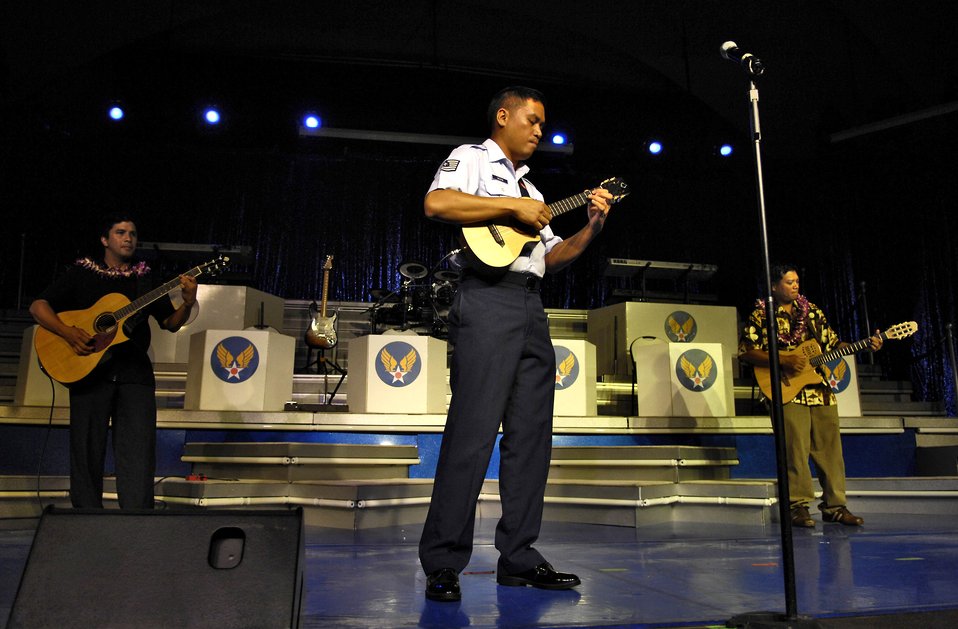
Uniquely ukulele: Airman plays from the heart

Tech. Sgt. Daniel Baduria plays his ukulele as the opening act for Tops In Blue Sept. 12 at the Waikiki Shell in Honolulu. He inherited his music talent from his father, Donald Baduria, who was an Airman with the Strolling Strings Trio in the Air Force's Tops In Blue entertainment showcase in the 1950s. Sergeant Badura played as part of the Heritage to Horizons theme of the Air Force's 60th anniversary. Tops In Blue, the Air Force's signature entertainment group, gave a free performance for the public to celebrate Air Force Week Honolulu and the Air Force's 60th anniversary. Sergeant Baduria is an aircraft fuel systems specialist with the Hawaii Air National Guard's 154th Wing.